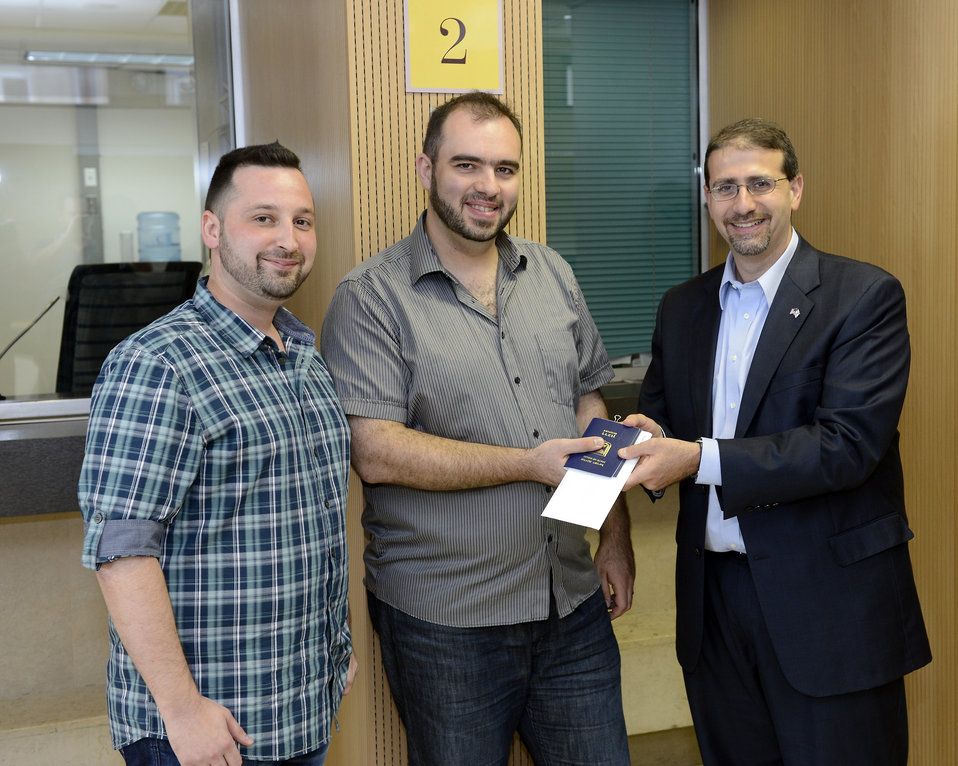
Ambassador Shapiro Presents Embassy Tel Aviv's First Visas for Same-Sex Partners to Sergey Shepshelevich and Alexander Polyakov

Taking advantage of new rules allowing married same-sex partners to receive federal benefits put in place after the U.S. Supreme Court decision striking down the Defense of Marriage Act (DOMA), the U.S. Embassy in Tel Aviv, Israel, issues its first-ever derivative visas to the same-sex spouses of two Israelis relocating to the United States on work visas. U.S. Ambassador to Israel Dan Shapiro presents the approved visas to Sergey Shepshelevich and Alexander Polyakov at the Embassy’s visa section on August 8, 2013.